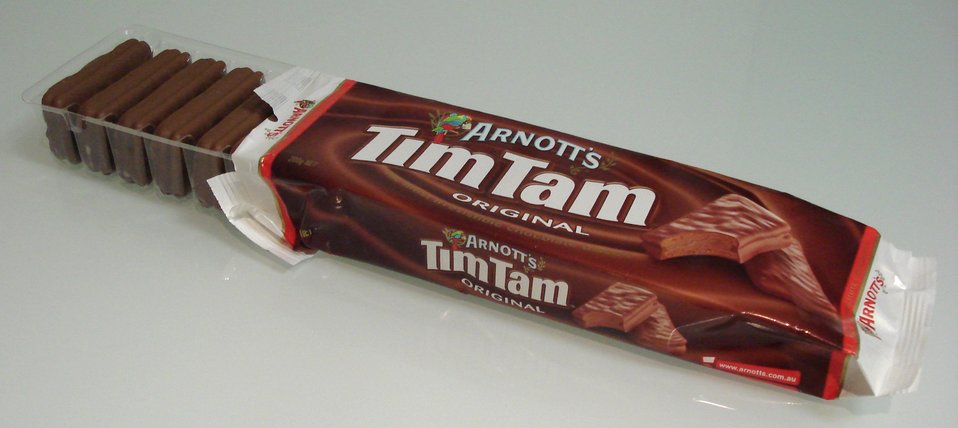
A packet of Tim Tams, with the biscuit tray half sticking out of the packet to display the biscuits.